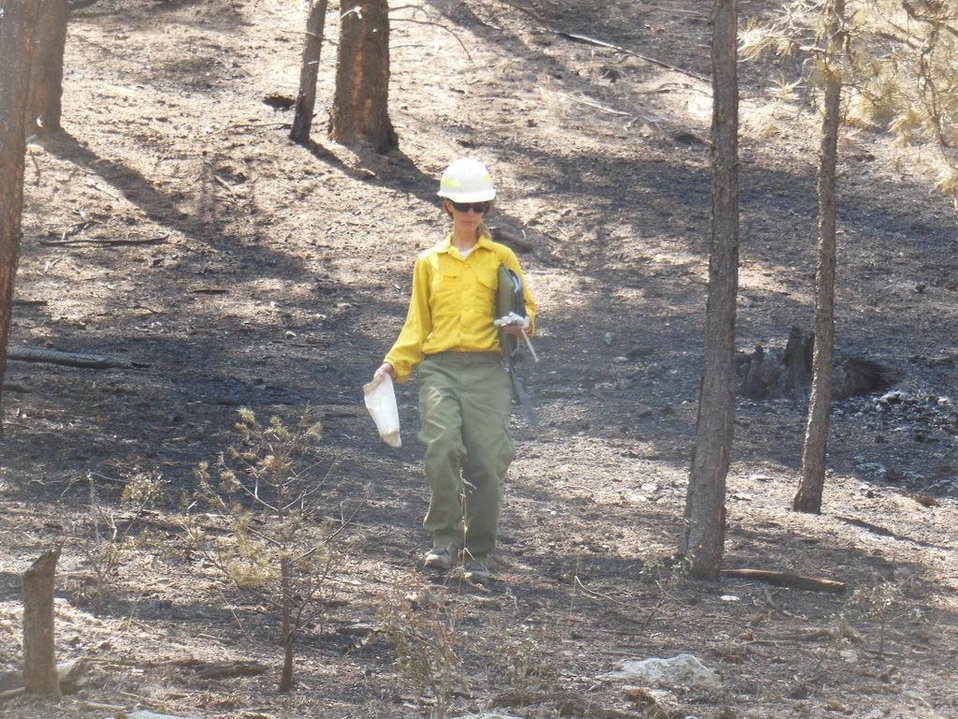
A soil scientist with the Burned Area Emergency Response (BAER) team assesses a burn scar in the Quaking Aspen Creek area of the Silver Fire. The Silver Post Fire response has the Burned Area Emergency Response (BAER) team beginning operations to seed acres of high burn severity and to mulch additional acres. Seeding reduces effects to downstream life, property, and infrastructure by reducing erosion and runoff. Areas of high burn severity are to be seeded with a quick germinating, non-persistent annual cereal barley that would provide rapid ground cover. A small percentage of native perennial species would also be included to give the burned area a jump start in natural recovery, and provide for long-term ground cover. Mulch is the most effective treatment for controlling erosion and runoff, as it provides immediate ground cover. Mulch also assists in stabilizing soil in and around these areas.